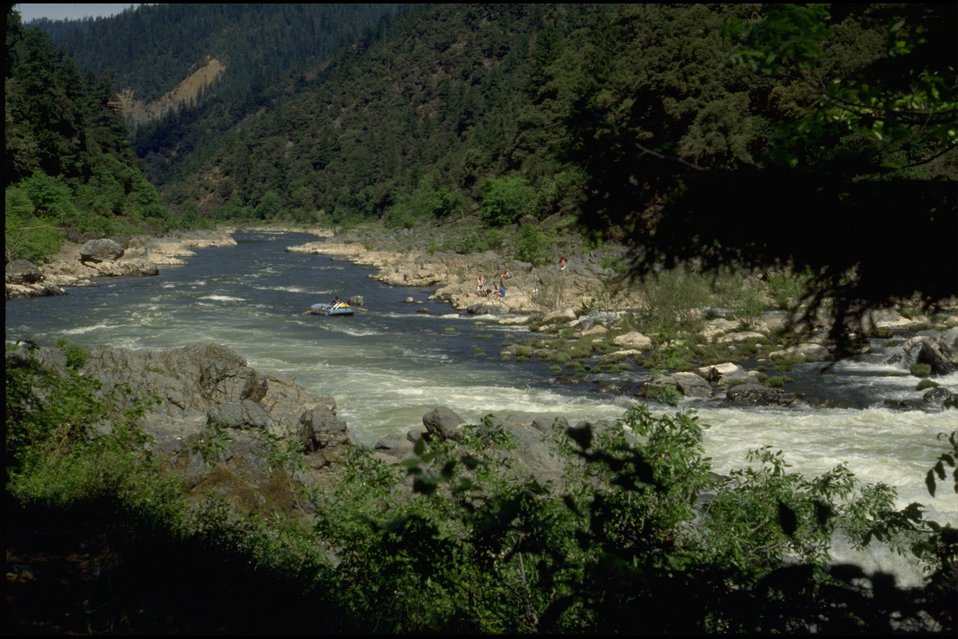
Rogue River; Rainie Falls Area.